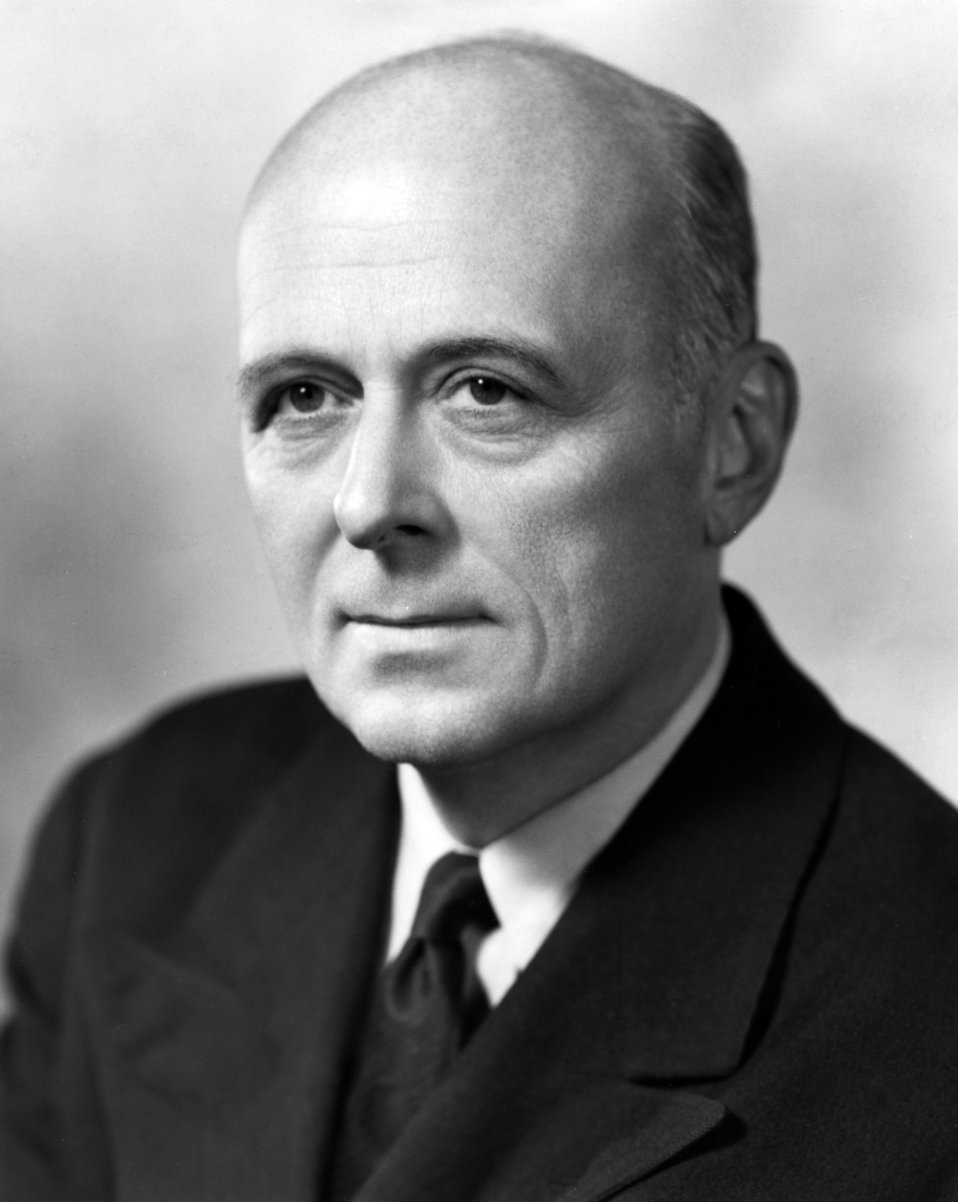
Thomas K. Finletter was the second secretary of the Air Force from April 24, 1950 to Jan. 20, 1953.